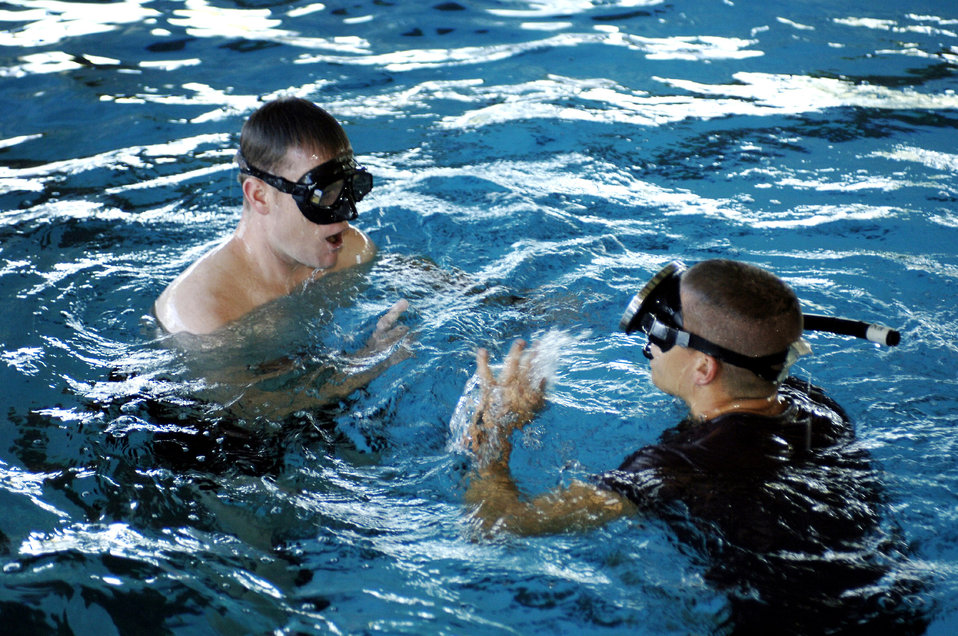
Creating CROs

MOODY AIR FORCE BASE, Ga. (AFPN) -- Candidates dive to the bottom of an indoor pool to recover their snorkels and masks during a recent CRO selection board. Most CRO candidates are lost during the water confidence portion of the physical test.